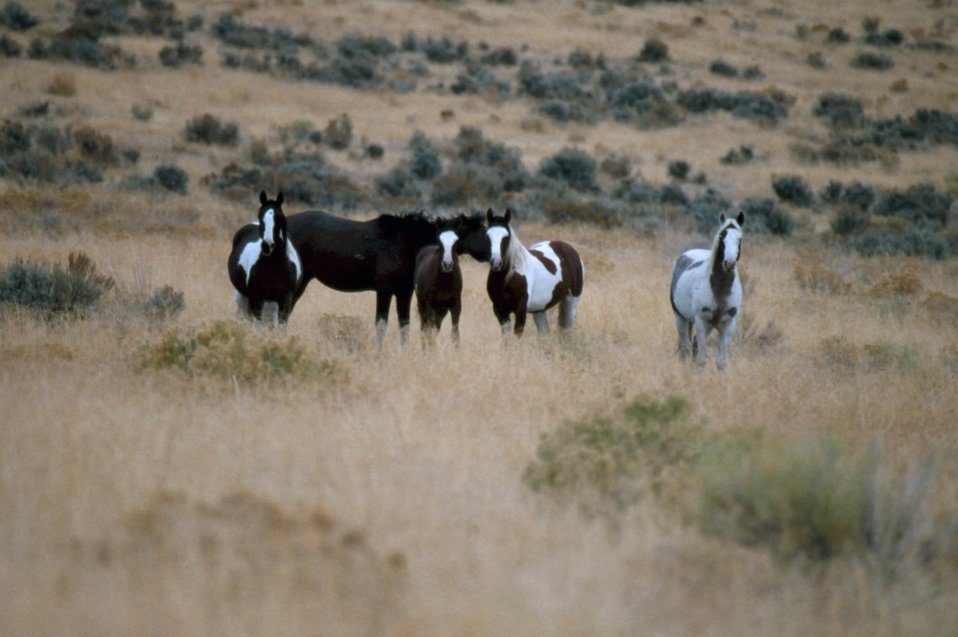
South Steens Wild Horse Management Heard Area.